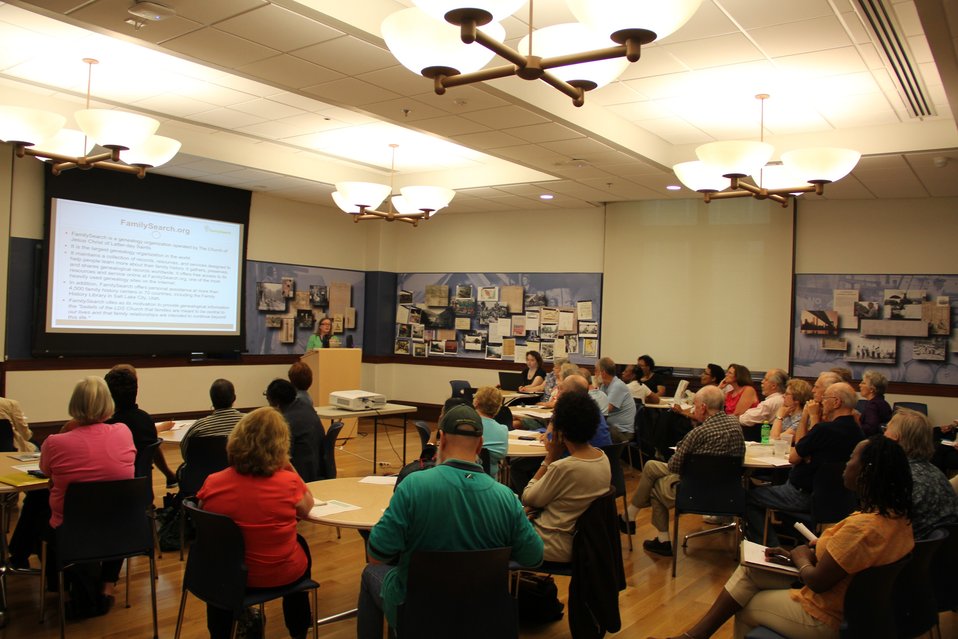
Dorothy Dougherty gives the last of the springtime genealogy talks at the New York Office; Location: National Archives at New York City, New York, New York